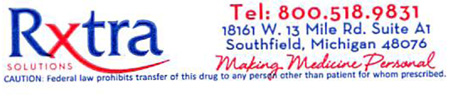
RECALLED – Sterile Injectable

July 31, 2013 – Product Recall – Beacon Hill Pharmacy d/b/a Rxtra Solutions Issues Voluntary Nationwide Recall of Certain Sterile Products Due to a Question of Sterility Assurance.